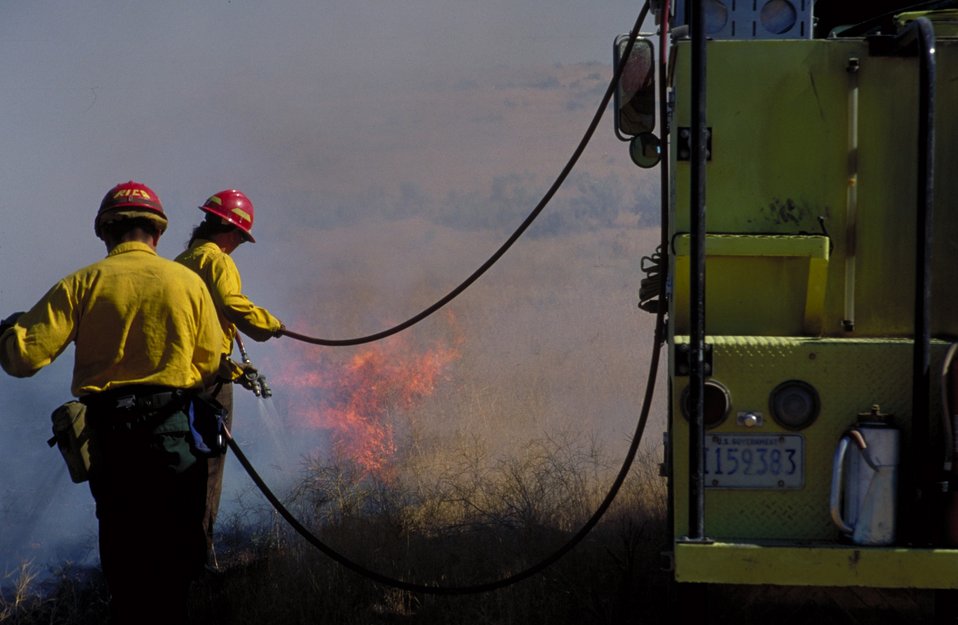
Prescribed burn Fire Season 2000 Lower Snake River District LSRD